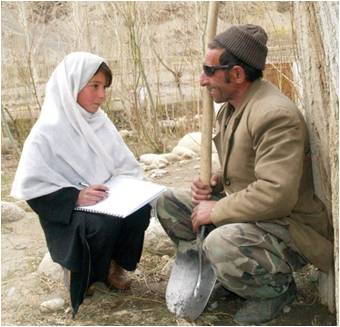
Children Care about their Environment

Perched high in the mountains on the border with China, Pakistan, and Tajikistan, Afghanistan’s Wakhan District seems like the end of the world to most people. To 12-year-old Seema, however, it is her world and she wants to protect it.
Through its partner the Wildlife Conservation Society (WCS), USAID is giving Seema and her peers the tools they need to protect and preserve the mountain environment that supports them. The WCS environmental education program for Wakhan schools operates in all 13 government schools in the district. It is part of a comprehensive strategy to create legislative and community support for environmental practices that contribute to sustainable and appropriate economic development.
The 56 school committees in the Wakhan environmental education program have a total membership of 438 male and 88 female students. There are 82 teachers (including school headmasters) leading the program. Each school has four student committees: wildlife, livestock, forestry, and significant environmental events.
The committees collect data using a simple set of forms developed by the teachers and WCS. The wildlife committees interview herders and fuel wood collectors on a daily basis to record sightings. The livestock committees record the number of animals per household, any increase or decrease, and the reason for the change. The forestry committees collect data on daily household fuel wood usage, including type and amount of fuel wood gathered. The environmental events committees record community events including disputes, that concern the forest; livestock; wildlife (including hunting); and other events such as flooding, weather, or insect pests.
The unprecedented experience with civil society institutions also inspired students in four schools to form cleanliness committees to promote personal hygiene for students and keep the school grounds clean. Thanks to support from the U.S. Government, environmental awareness is rising in the Wakhan region and children are becoming positive agents for change in their own communities.